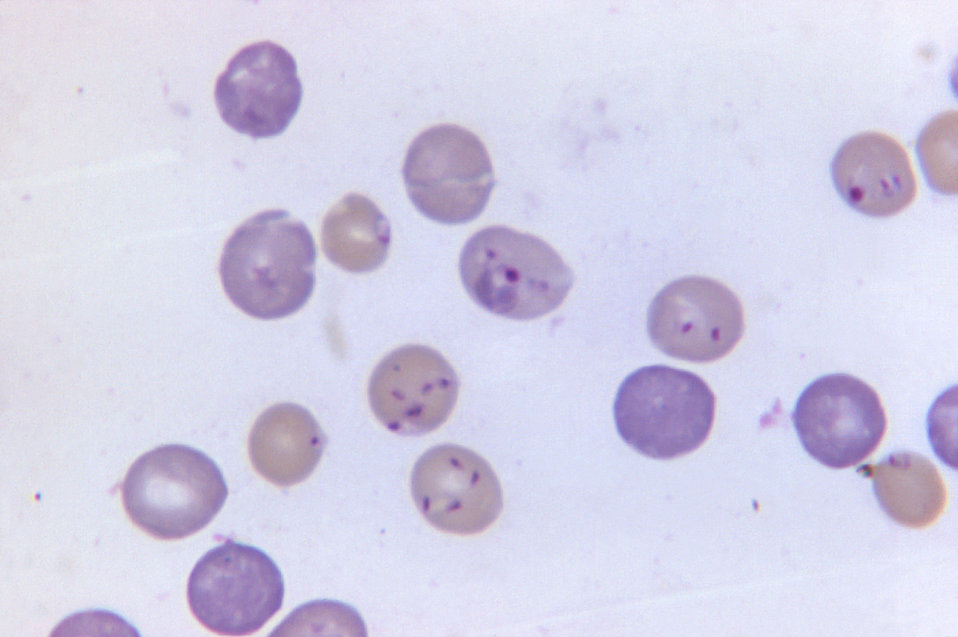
These Giemsa stained hamster red blood cells contain both Babesia microti and Plasmodium berghei; Mag. 1125X.